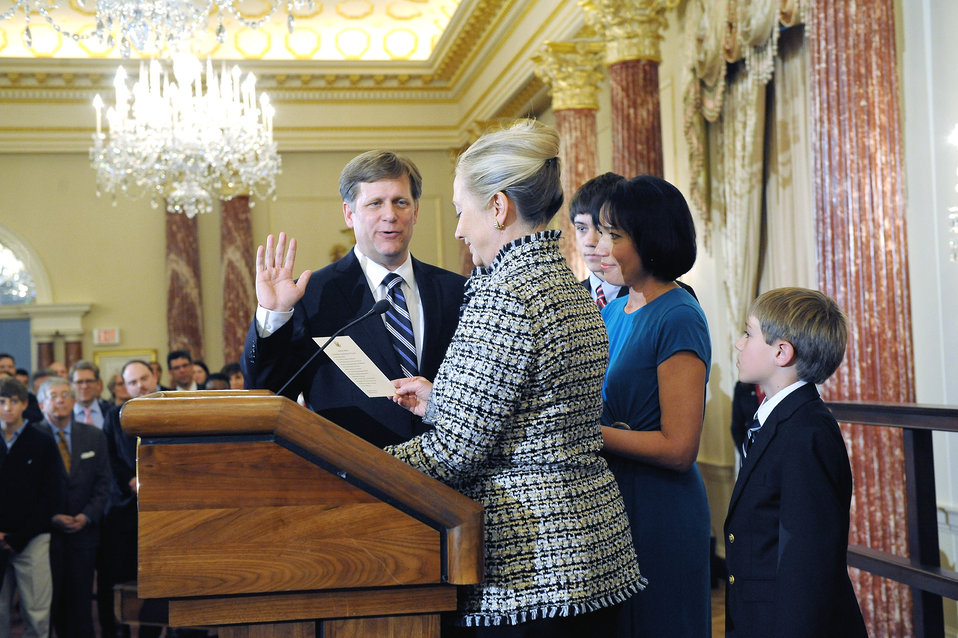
Secretary Clinton Holds a Swearing-In Ceremony for Ambassador-Designate McFaul

U.S. Secretary of State Hillary Rodham Clinton holds a swearing-in ceremony for U.S. Ambassador-designate to Russia Mike McFaul at the U.S. Department of State in Washington, D.C., on January 10, 2012.